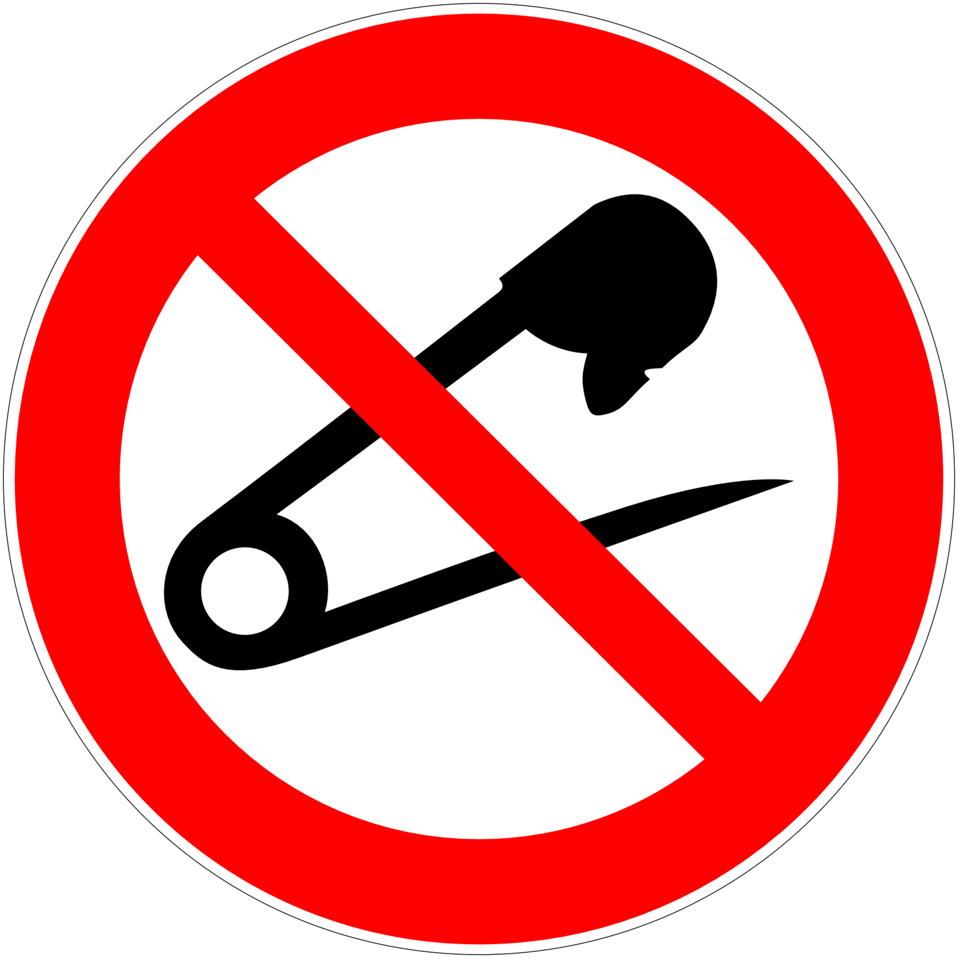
Deutsch: Keine Nadeln einstechen, Verbotszeichen D-P033 nach DIN 4844-2 Do not use pins, prohibition sign D-P033 according to German standard DIN 4844-2